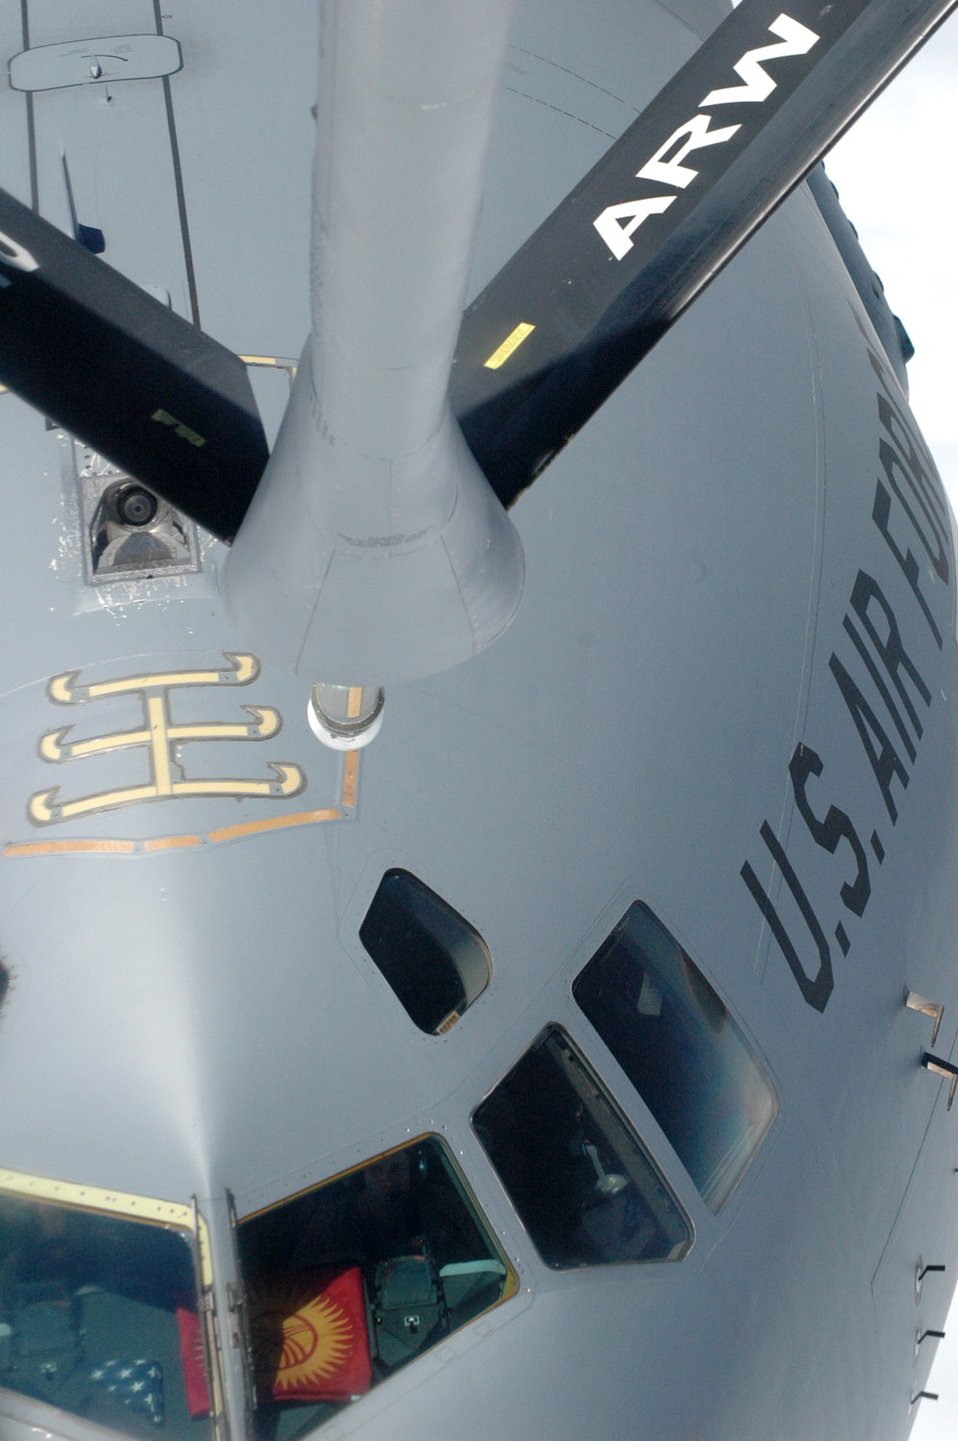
Kyrgyz government leaders experience Manas mission

Kyrgyz and American flags are flown in the flight deck of a C-17 Globemaster III during a refueling mission May 19 above Kyrgyzstan. The mission of the 376th Air Expeditionary Wing is to deliver passengers, fuel and cargo into and out of Afghanistan in support of Operation Enduring Freedom.